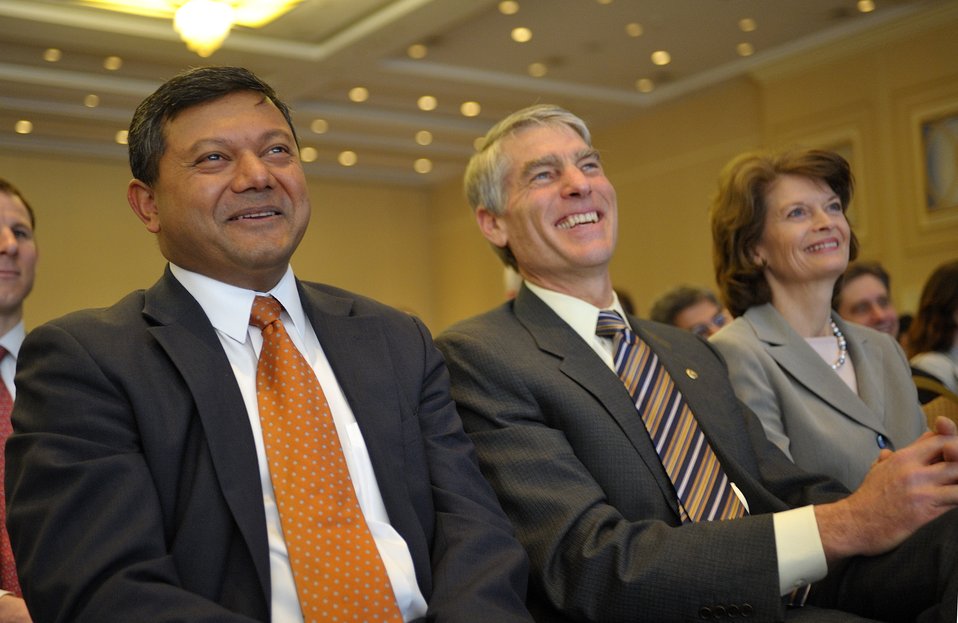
ARPA-E Energy Innovation Summit 2011, 28 of 83

Dr. Arun Majumdar, Director, ARPA-E, Senator Mark Udall (D-CO) and Senator Lisa Murkowski (I-AK) watch Steven Chu, Secretary, United States Department of Energy give his keynote on Tuesday Morning.